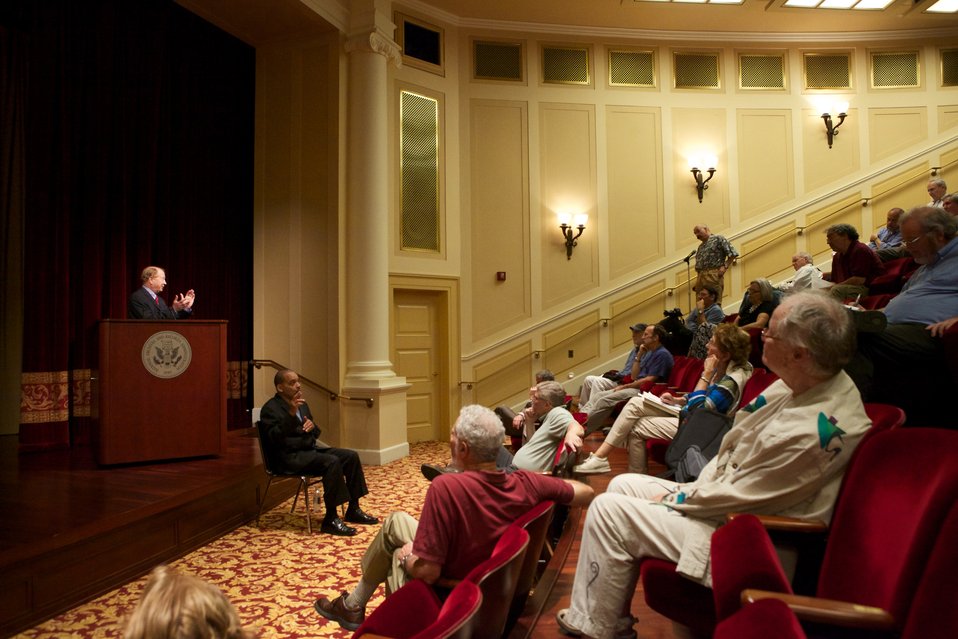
Revolutionary Summer; Joseph Ellis, author, discusses his book Revolutionary Summer: The Birth of American Independence